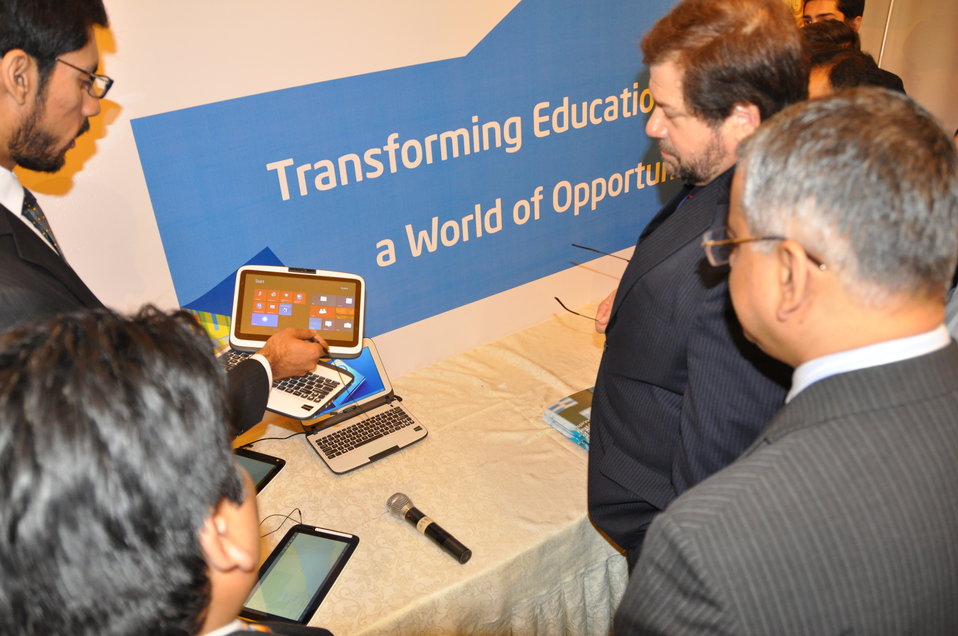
Intel MoU4

USAID Punjab Provincial Director Jeffery Bakken and Intel Pakistan Country Manager Naveed Siraj look on as some of the educational tools Intel can deliver through the agreement that was signed on Thursday.